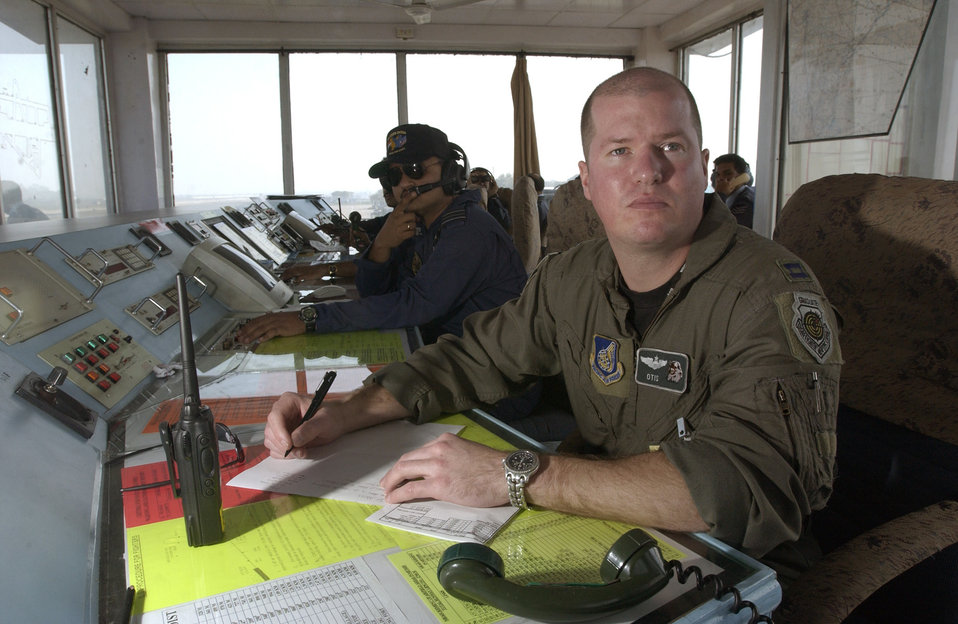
Cope India '04

GWALIOR AIR FORCE STATION, India -- Capt. Mark Snowden performs flight safety duties in the control tower here during Cope India '04. The bilateral fighter exercise between Indian and U.S. air forces is the first of its kind in more than 40 years. Captain Snowden is an F-15 Eagle pilot from Elmendorf Air Force Base, Alaska.